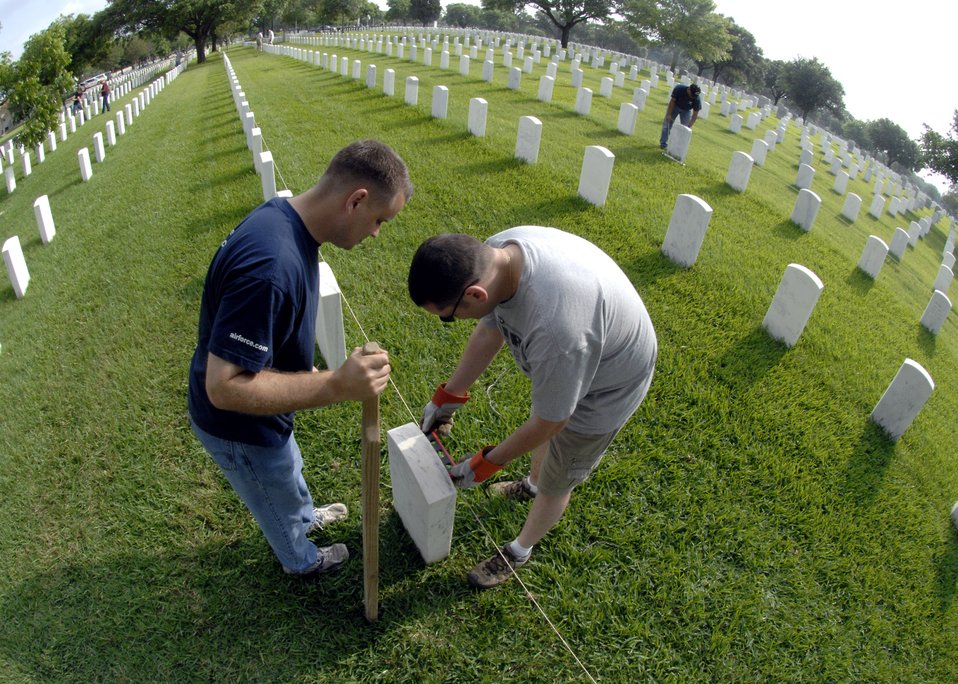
Serving those who served

Tech. Sgts. Ryan Hoke (left) and Jason Litalien straighten headstones May 15 at the Fort Sam Houston National Cemetery in San Antonio. These volunteers were helping to prepare the cemetery for Armed Forces Day and the upcoming Memorial Day weekend. The sergeants are assigned to the Air Force News Agency in San Antonio.